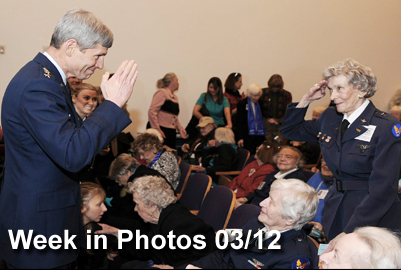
Week in Photos

Air Force Week in Photos for March 12, 2010, highlights photos from around the Air Force. In this photo by Andy Morataya, Air Force Chief of Staff Gen. Norton Schwartz returns a salute from WASP Bernice